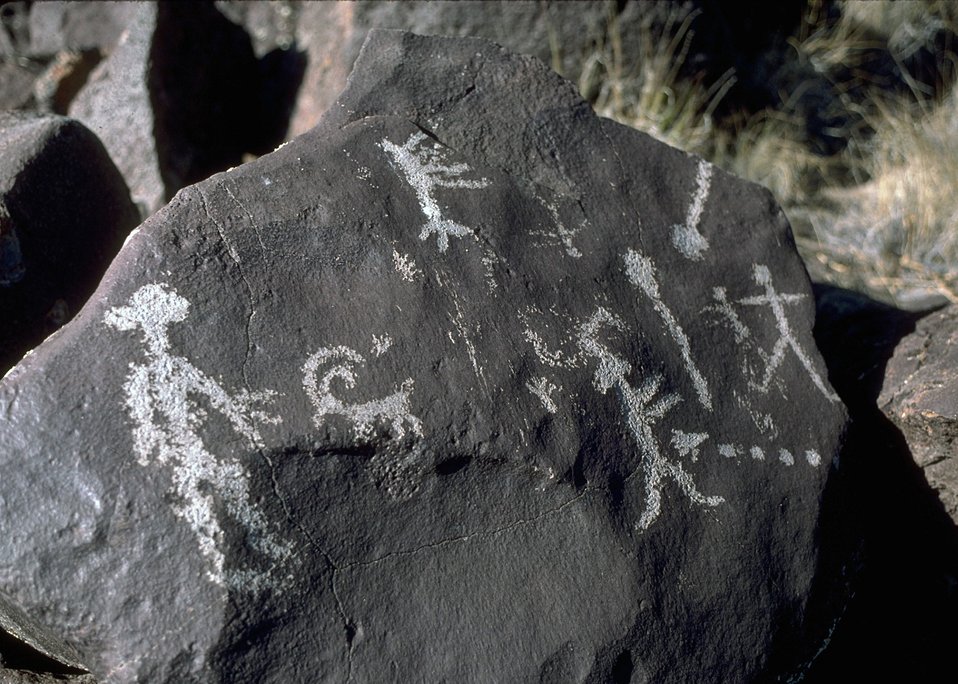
Petroglyphs at Long Draw in Southern Harney County, Oregon.